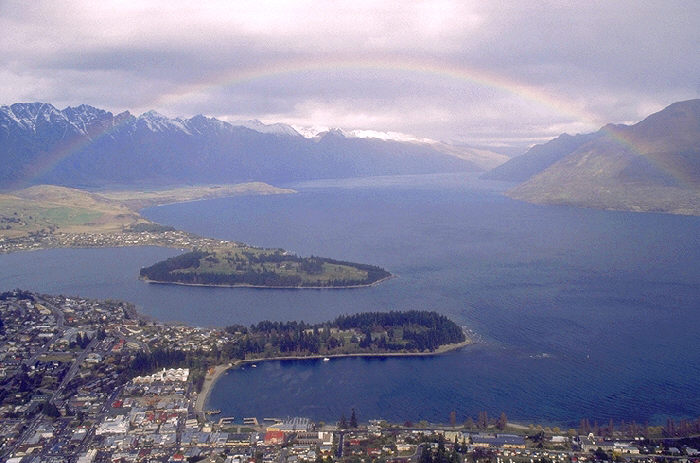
Queenstown, South Island, New Zealand.